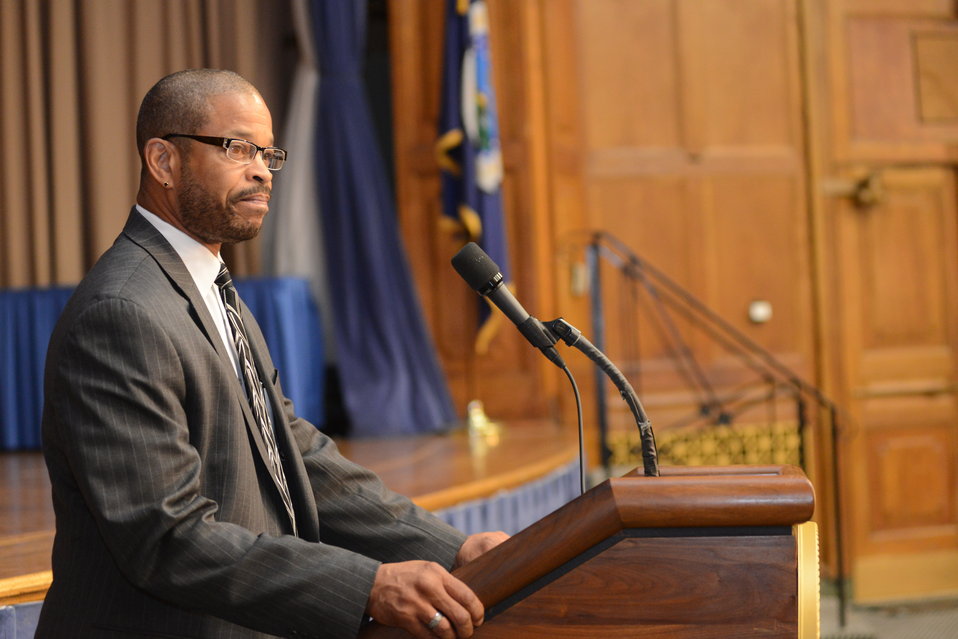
U.S. Department of Agriculture (USDA) Chief Human Capital Office William P. Milton, JR. makes opening remarks at the 2014 Lesbian/Gay/Bisexual/Transgender (LGBT) Pride Observance event held in the Jefferson Auditorium at USDA in Washington, D.C. on Thursday, Jun. 5, 2014.